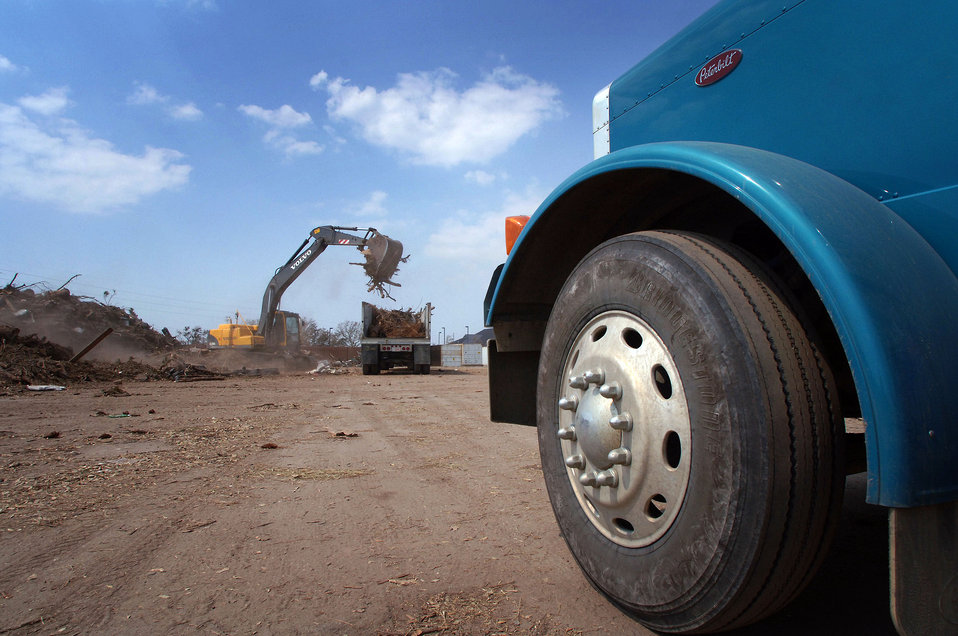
Keesler commander: Don't count us out

KEESLER AIR FORCE BASE, Miss. -- Large excavation equipment and a convoy of trucks work around the clock here moving debris caused by Hurricane Katrina. More than 400 volunteer Airmen and Red Horse civil engineers worked nonstop to ensure roads were accessible and main base areas were cleaned up.